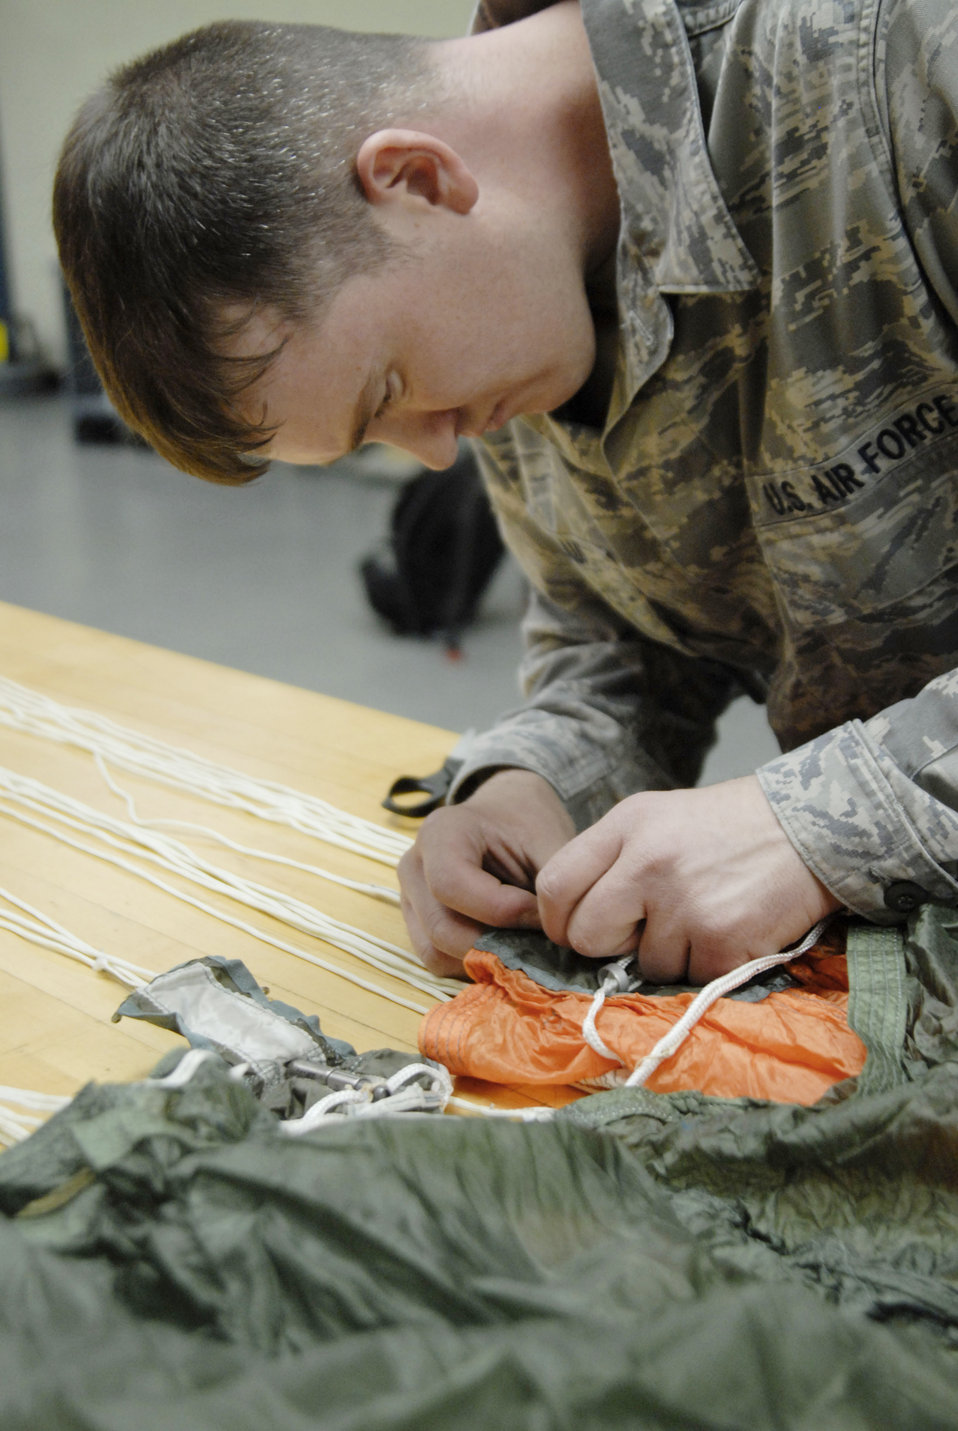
Kunsan Airmen protect lives

Tech. Sgt. Jonathan Anlauf checks the pockets of a parachute April 7, 2010, at Kunsan Air Base, South Korea. Sergeant Anlauf is the NCO in charge of the AFE assigned to the 8th Operations Support Squadron.